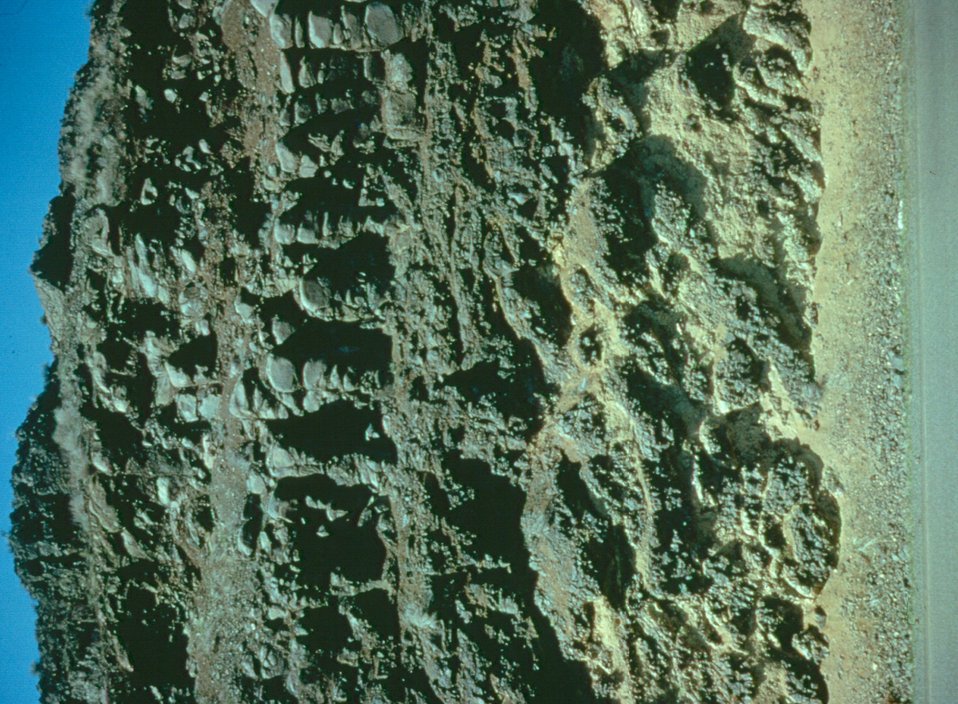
Pillow lava Four Rivers LSRD Lower Snake River District